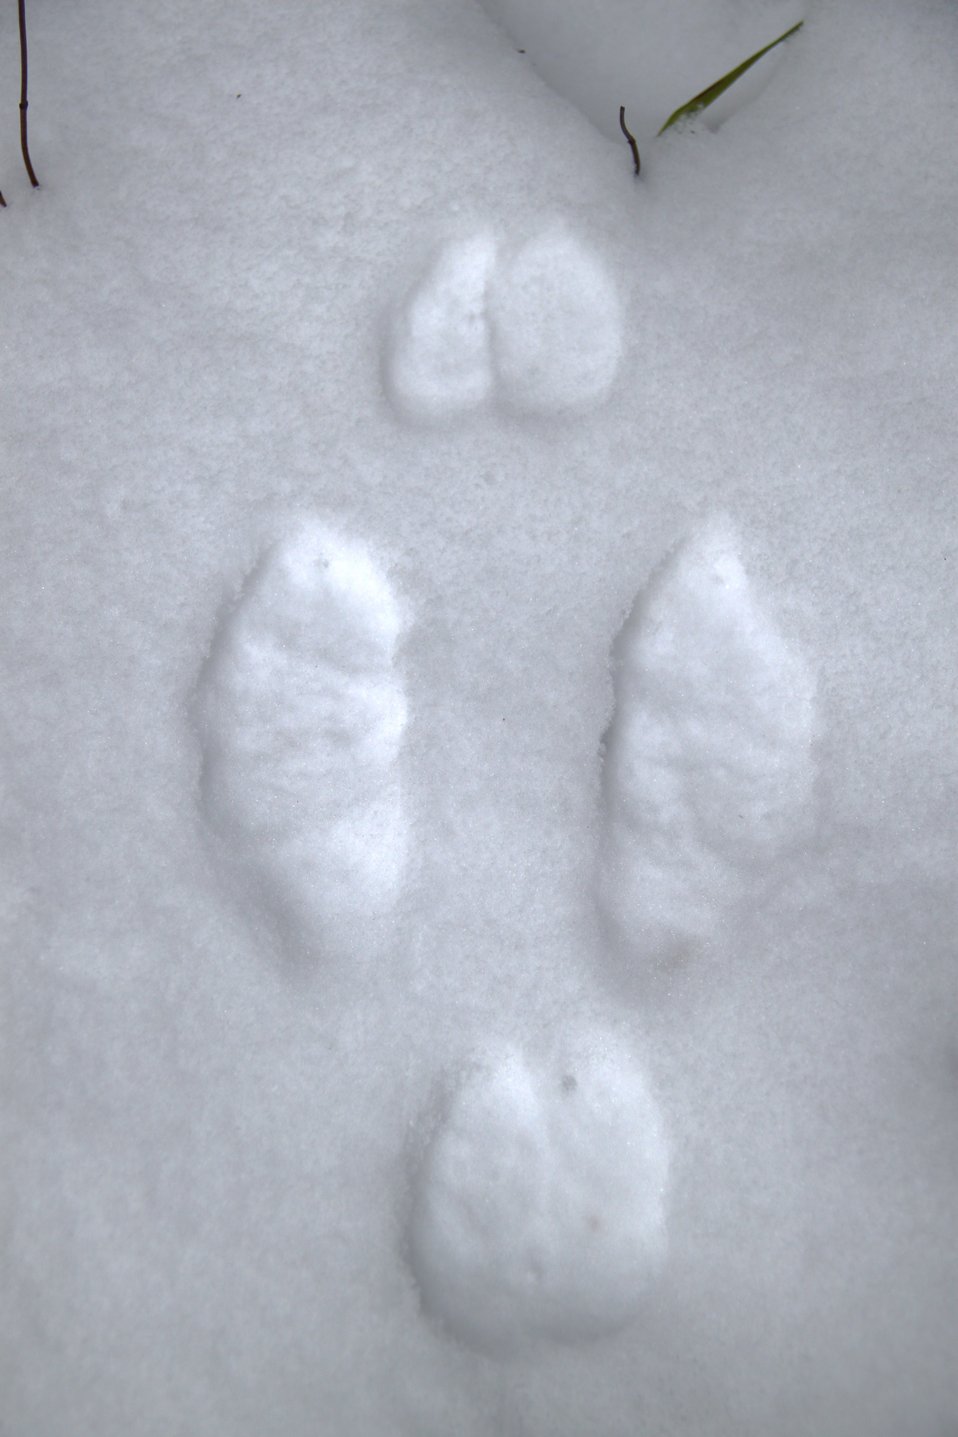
Snowshoe Hare tracks from the Westville unit of the Missisquoi NWR. These tracks show that the animal stopped and rested here as evident by the double prints of the front legs.